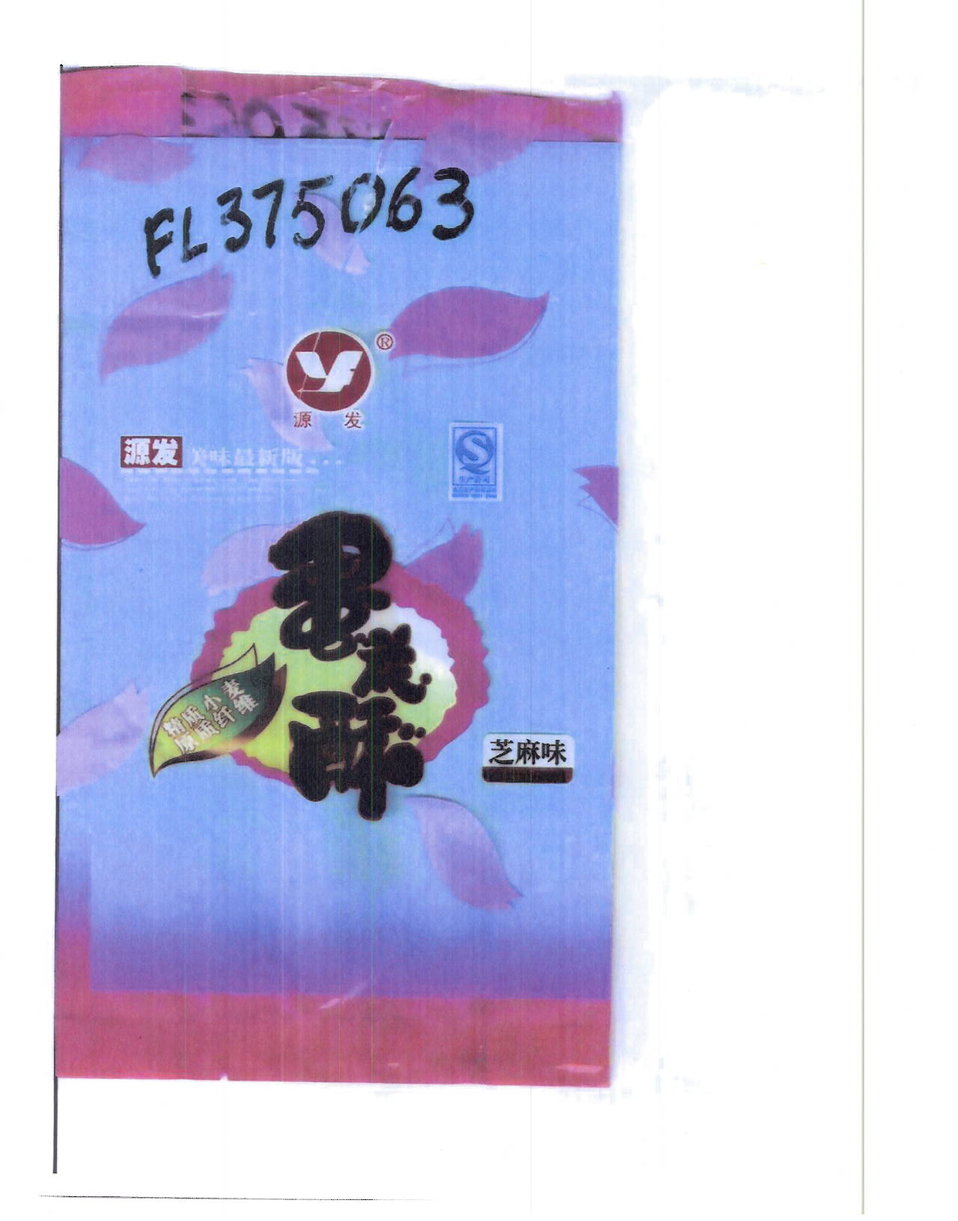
RECALLED - YF Sesame Flavor Cracker

April 11, 2014 - Product Recall - Domega NY International Co LTD Issues Allergy Alert On Undeclared Peanuts In YF Sesame Flavor Cracker.